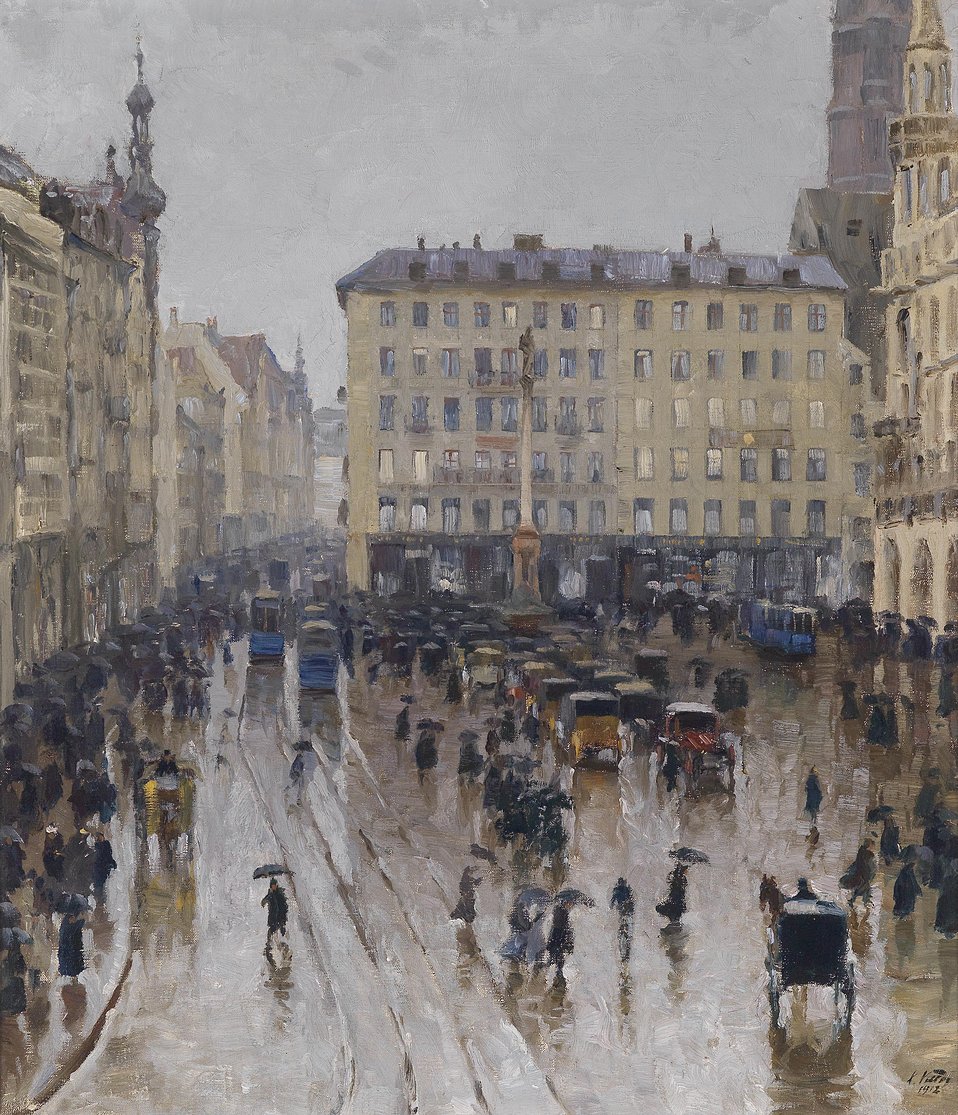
Deutsch: Blick auf den Marienplatz in München. Signiert, datiert K. Vetter 1912, Öl auf Leinwand, 70 x 60 cm